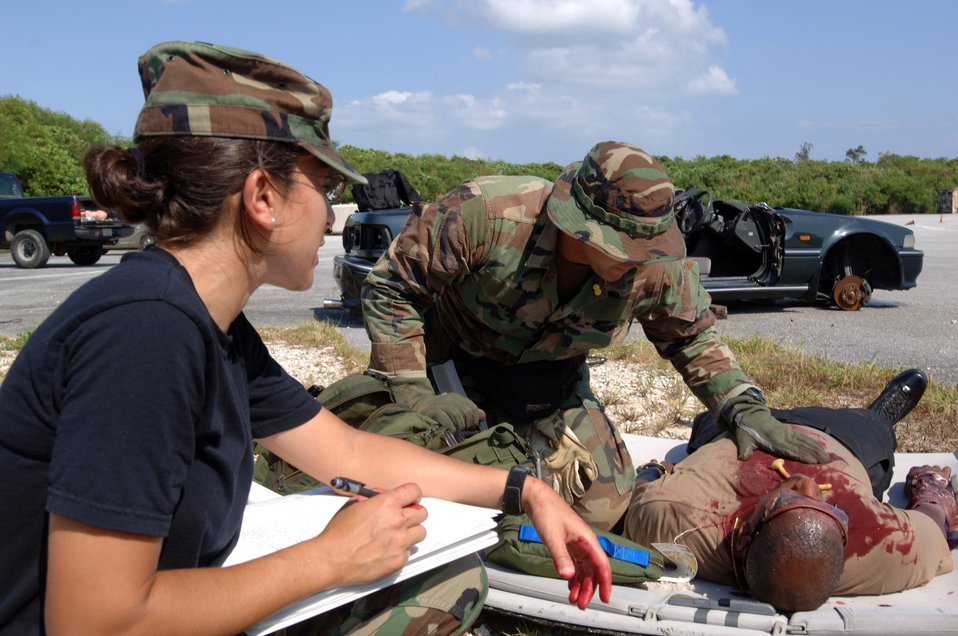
To the rescue

KADENA AIR BASE, Japan -- Maj. Mona Sinno (left) evaluates Senior Airman Sean Cole while he provides assistance to Tech. Sgt. Handel Stewart during a situational medical exercise here. During training, pararescuemen